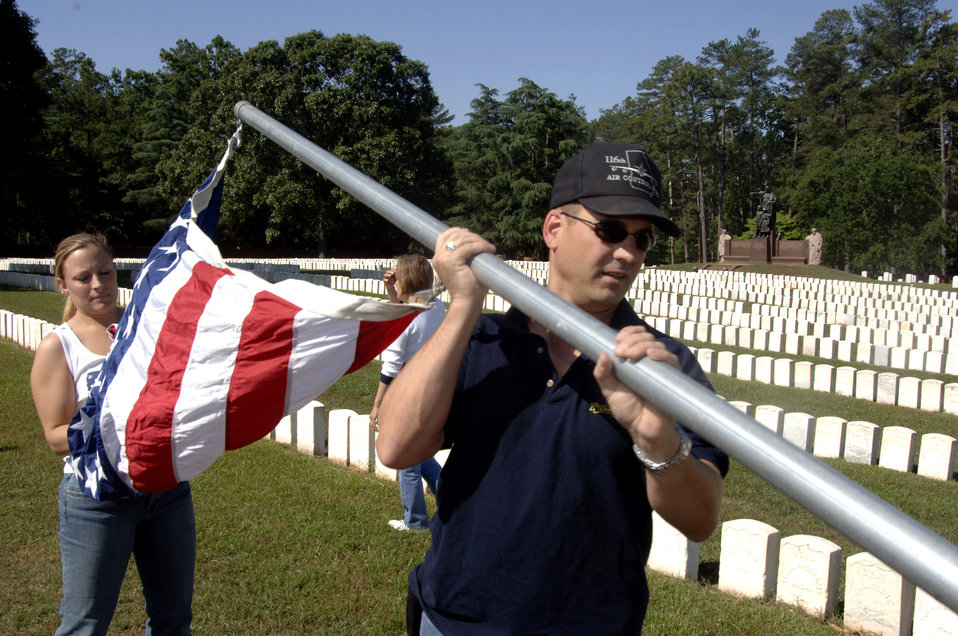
Memorial Day preparations at Andersonville Cemetery

First Lt. Tiffany Changet and Master Sgt. Randall Miller set up a U.S. flag at Andersonville National Cemetery near Americus, Ga., on Friday, May 19, 2006. They were part of a group of 70 motorcycle enthusiasts from Robins Air Force Base, Ga., who volunteered to set up U.S. flags for Memorial Day. The group rode as a convoy on the 50-mile trip. Lieutenant Changet and Sergeant Miller are with the 116th Air Control Wing.